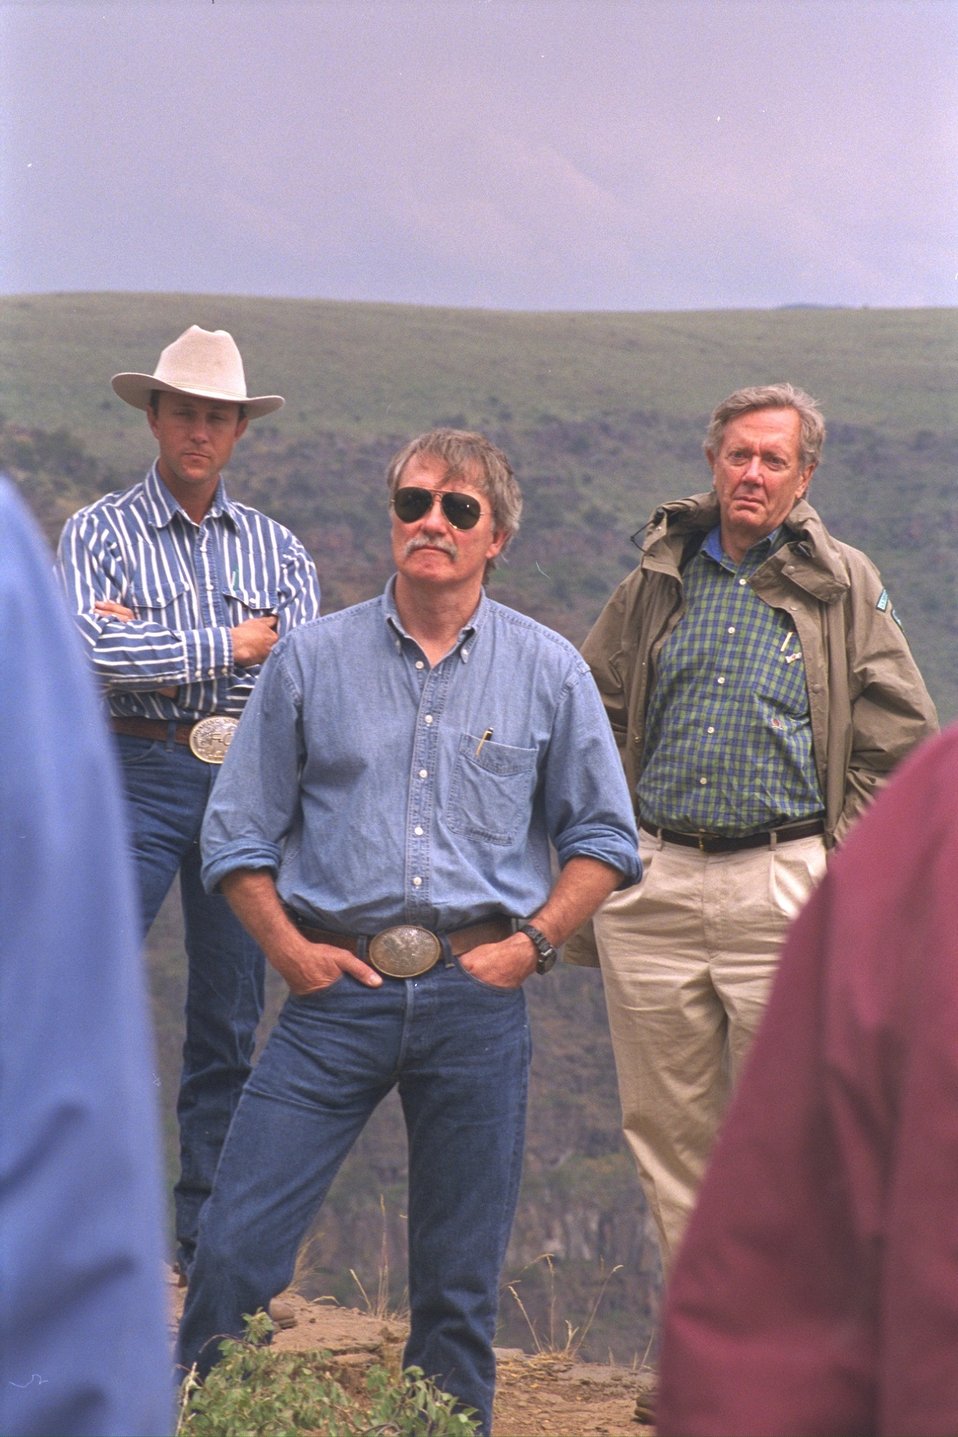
(L - R) Stacie Davies, Governor John Kitzhaber, and Secretary Babbitt at Big Indian Gorge on Steens Mountain.